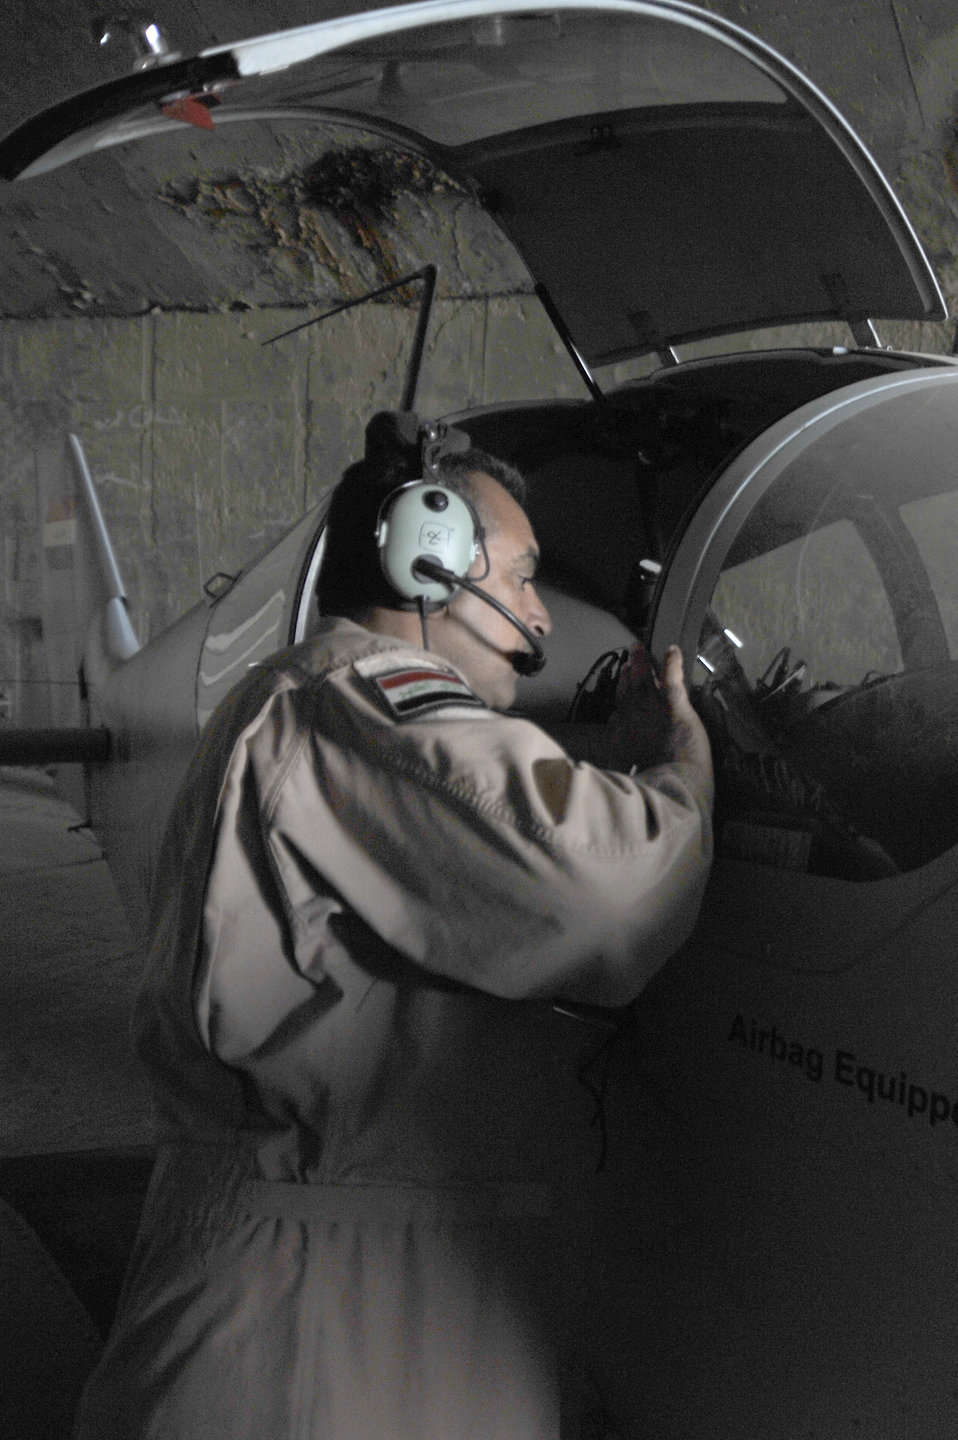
Iraqi Squadron 70

An Iraqi air force airman checks for damage after a sand storm, Oct. 24, 2010, at Ali Air Base, Iraq. Iraqi air force Squadron 70 flew the aircraft to conduct intelligence, surveillance and reconnaissance missions.